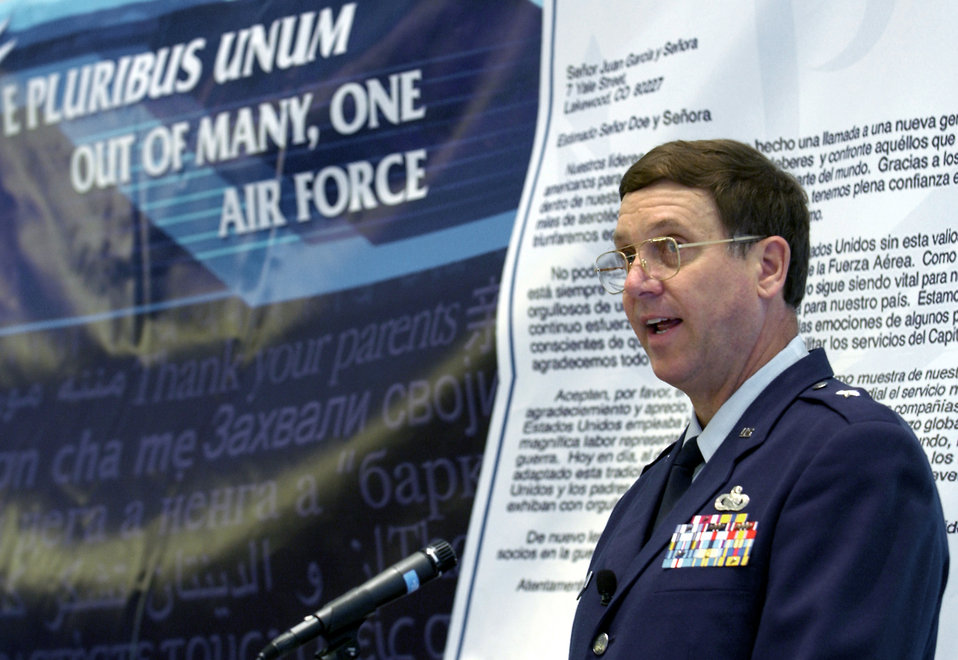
E Pluribus Unum

WASHINGTON -- Brig. Gen. Edward Tonini announces the launch of